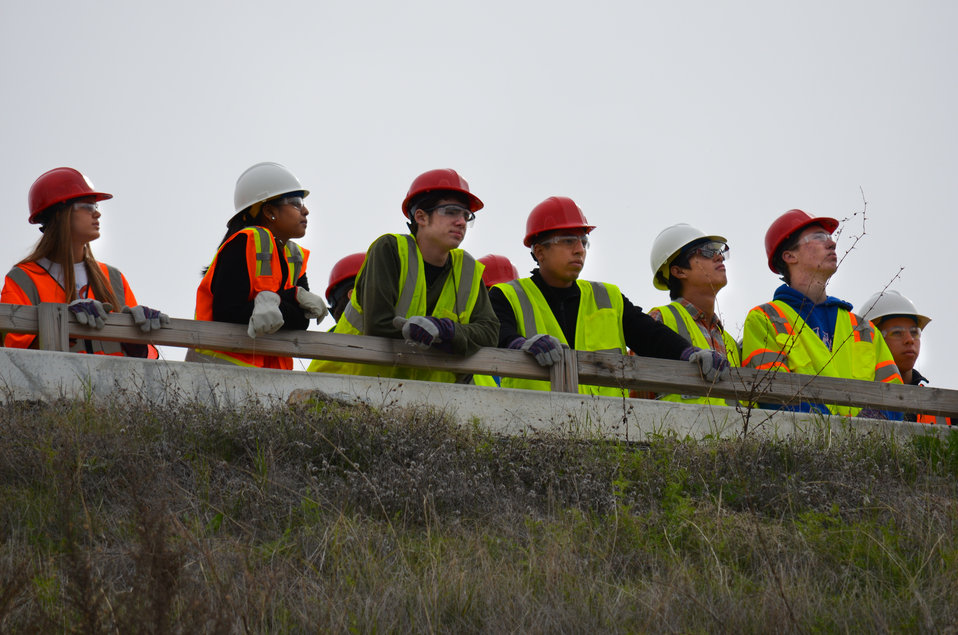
Students tour Folsom Dam auxiliary spillway construction during Engineer Week

A small group of the nearly 30 Folsom High School physics and engineering students view the U.S. Army Corps of Engineers Sacramento District's Folsom Dam auxiliary spillway construction site February 18, 2014 in Folsom, Calif. The group's visit coincided with National Engineer Week which is typically celebrated in February to recognize engineering feats such as the spillway. The Corps, together with the U.S. Bureau of Reclamation and state and local partners, is building the spillway to reduce flood risk throughout the Sacramento region.